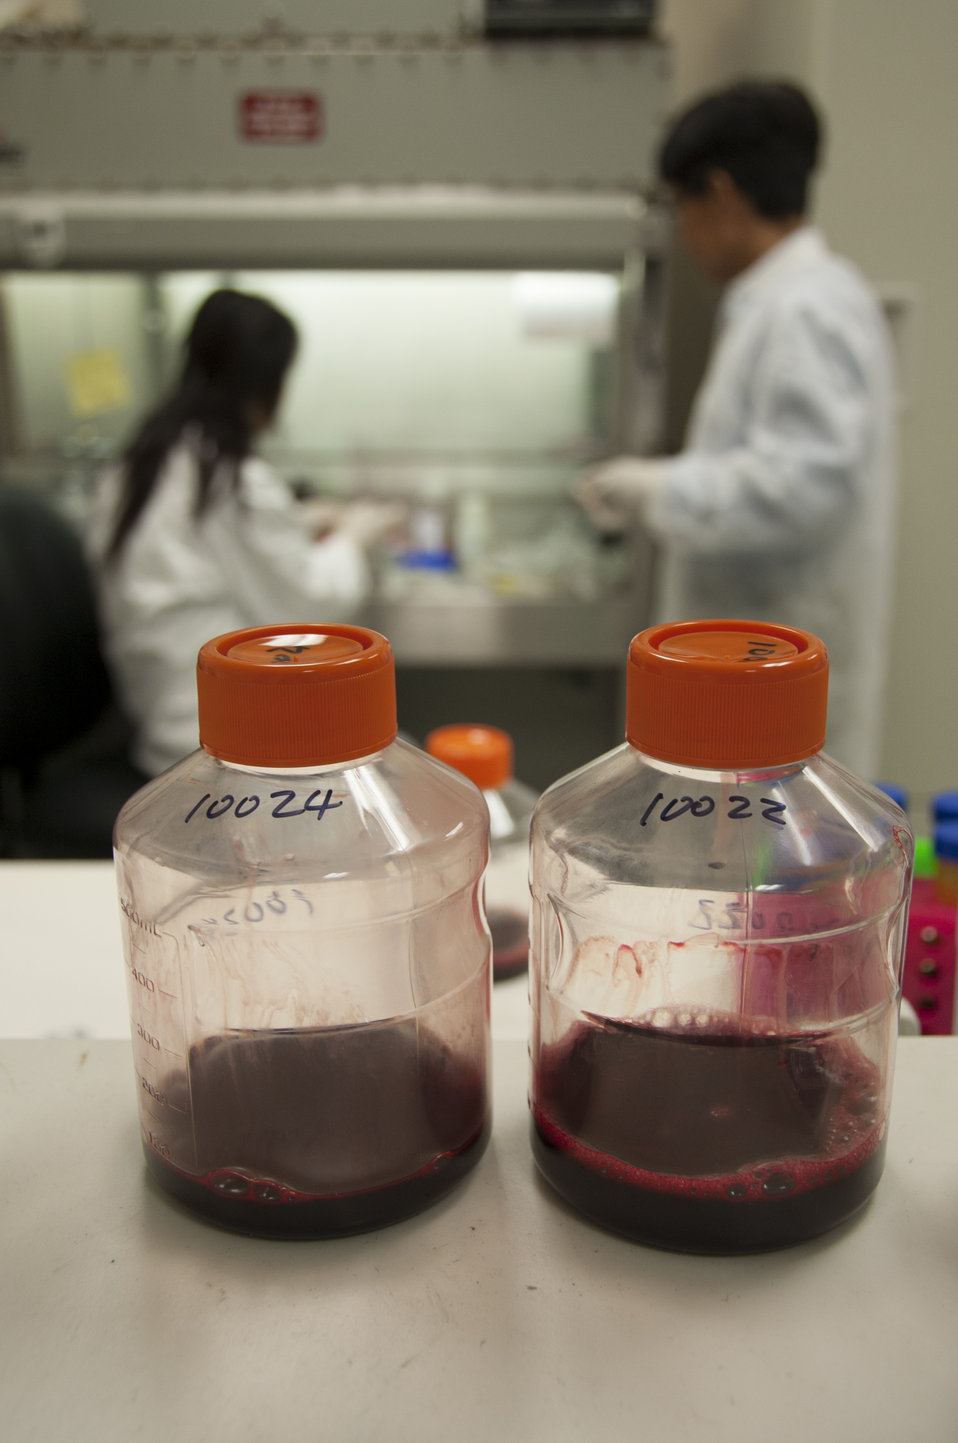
Blood Research: Saving Lives (8477)

Specimens of human whole blood are shown in the foreground as Jason Liu, Ph.D., and Meihong Liu, Ph.D., work in their laboratory at FDA’s Office of Blood Research and Review. FDA is responsible for the safety of our nation’s blood supply and is at the forefront of evaluating and encouraging innovative technologies for protecting it.

Read this Consumer Update to learn more: Advances in Saving Lives with Blood